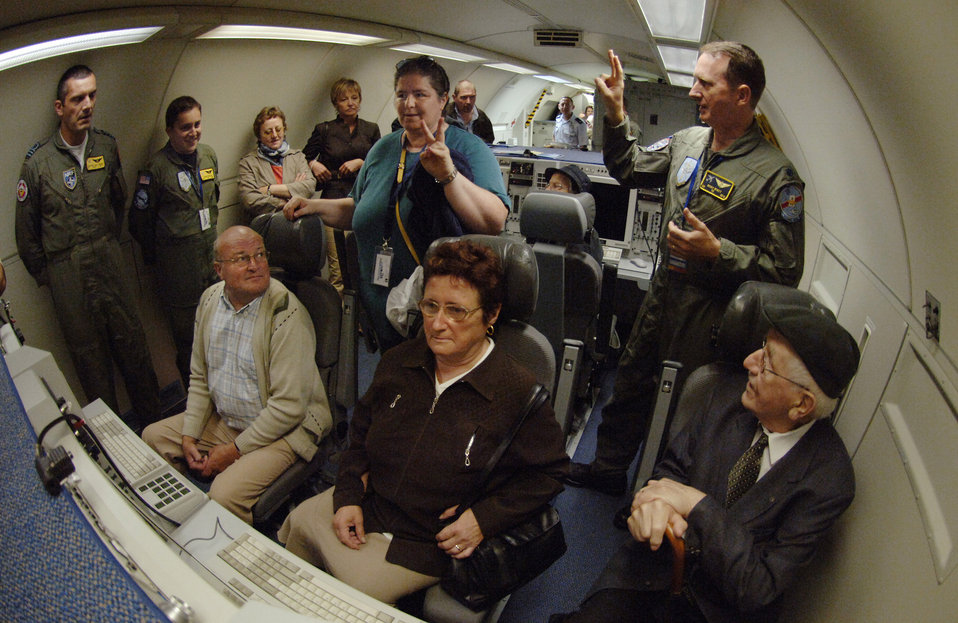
NATO celebrates 25th anniversary of E-3's arrival

Lt. Col. Ricky Wyatt speaks about the E-3 Sentry's mission and capabilities to Belgian citizens with the help of interpreter Isabell Engels June 16 at Geilenkirchen NATO Air Base, Germany. The civilians were among several thousand local citizens who attended a 25th anniversary celebration of the aircraft's initial operations at the NATO base in northern Germany. Colonel Wyatt is a tactical director on the NATO Airborne Early Warning and Control Force aircraft.